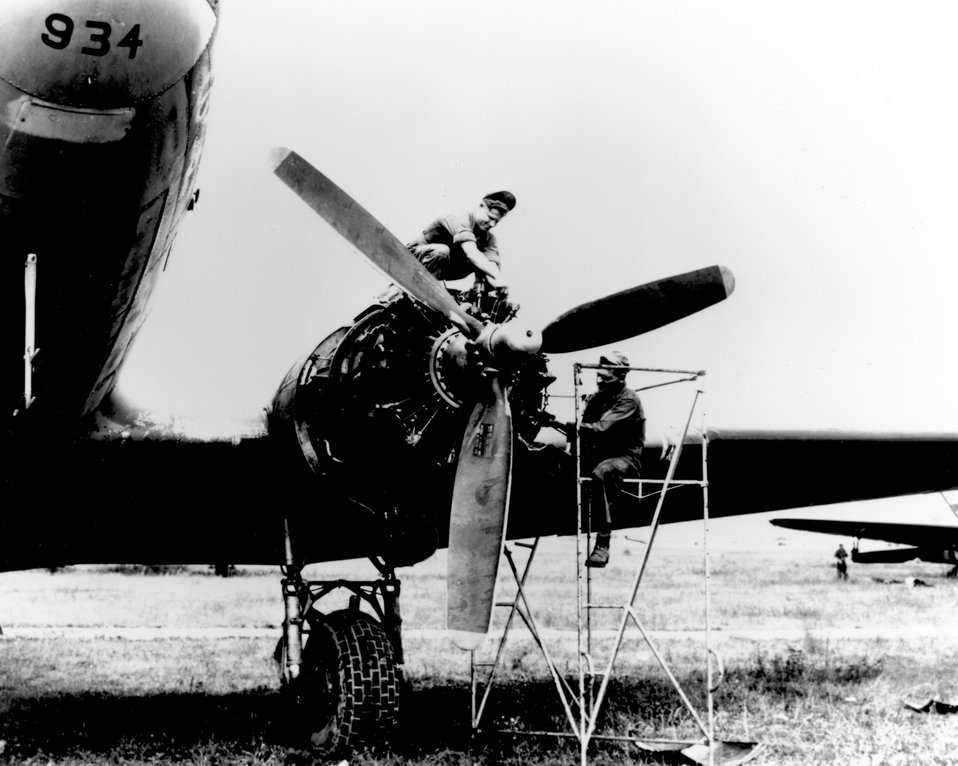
Senate recognizes Berlin Airlift anniversary

A C-47 Skytrain recevies minor engine repairs during the Berlin Airlift in 1948.